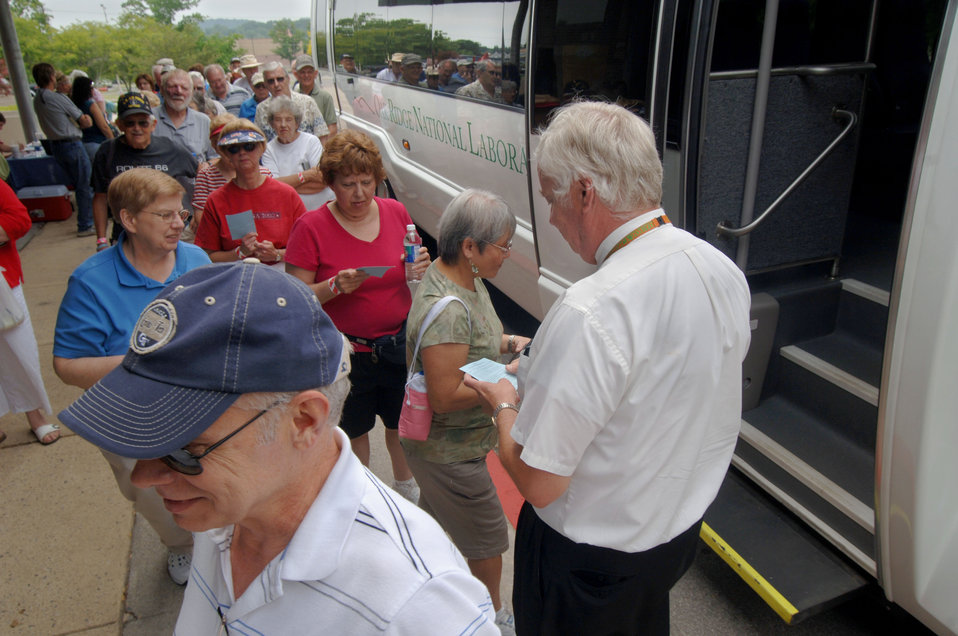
2013 Public Bus Tour kicks off June 3

09-144 DOE photo Lynn Freeny 5-22-2009 Oak Ridge Tennessee